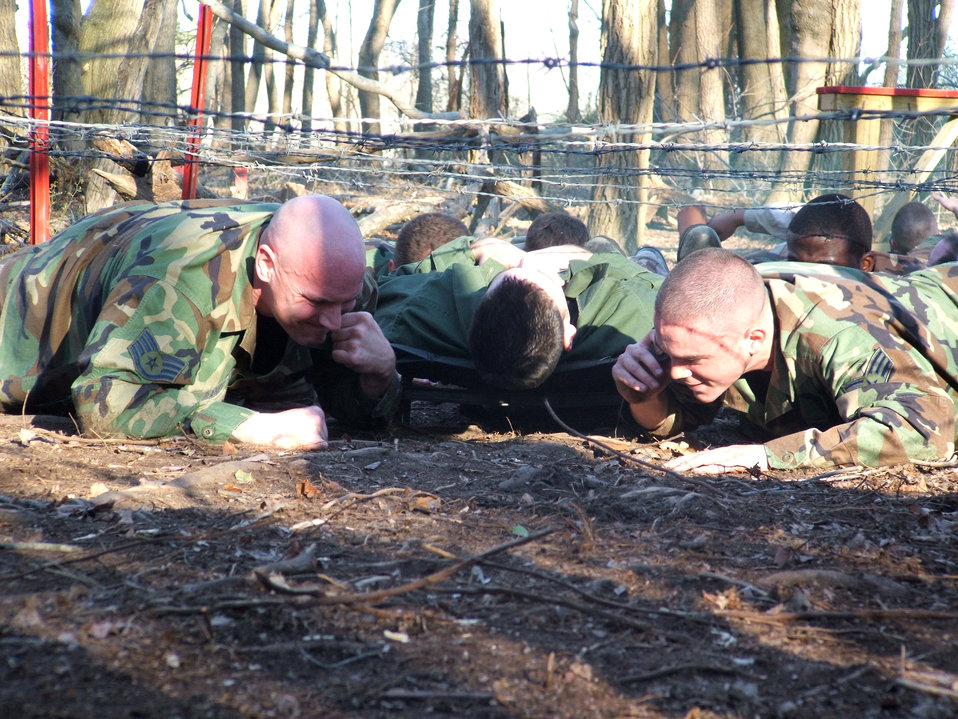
Phoenix Raven

Staff Sgt. Doug Ranke and Senior Airman Michael Tucker crawl under wire during the Air Force Phoenix Raven Course 06-D on Monday, March 27, 2006, at Fort Dix, N.J. The students include Air Force security forces and U.S. Navy masters at arms personnel. They are trained in combat first aid, tactical self defense and aircraft security and undergo extensive physical training. The course is taught by the Air Mobility Warfare Center's 421st Combat Training Squadron.